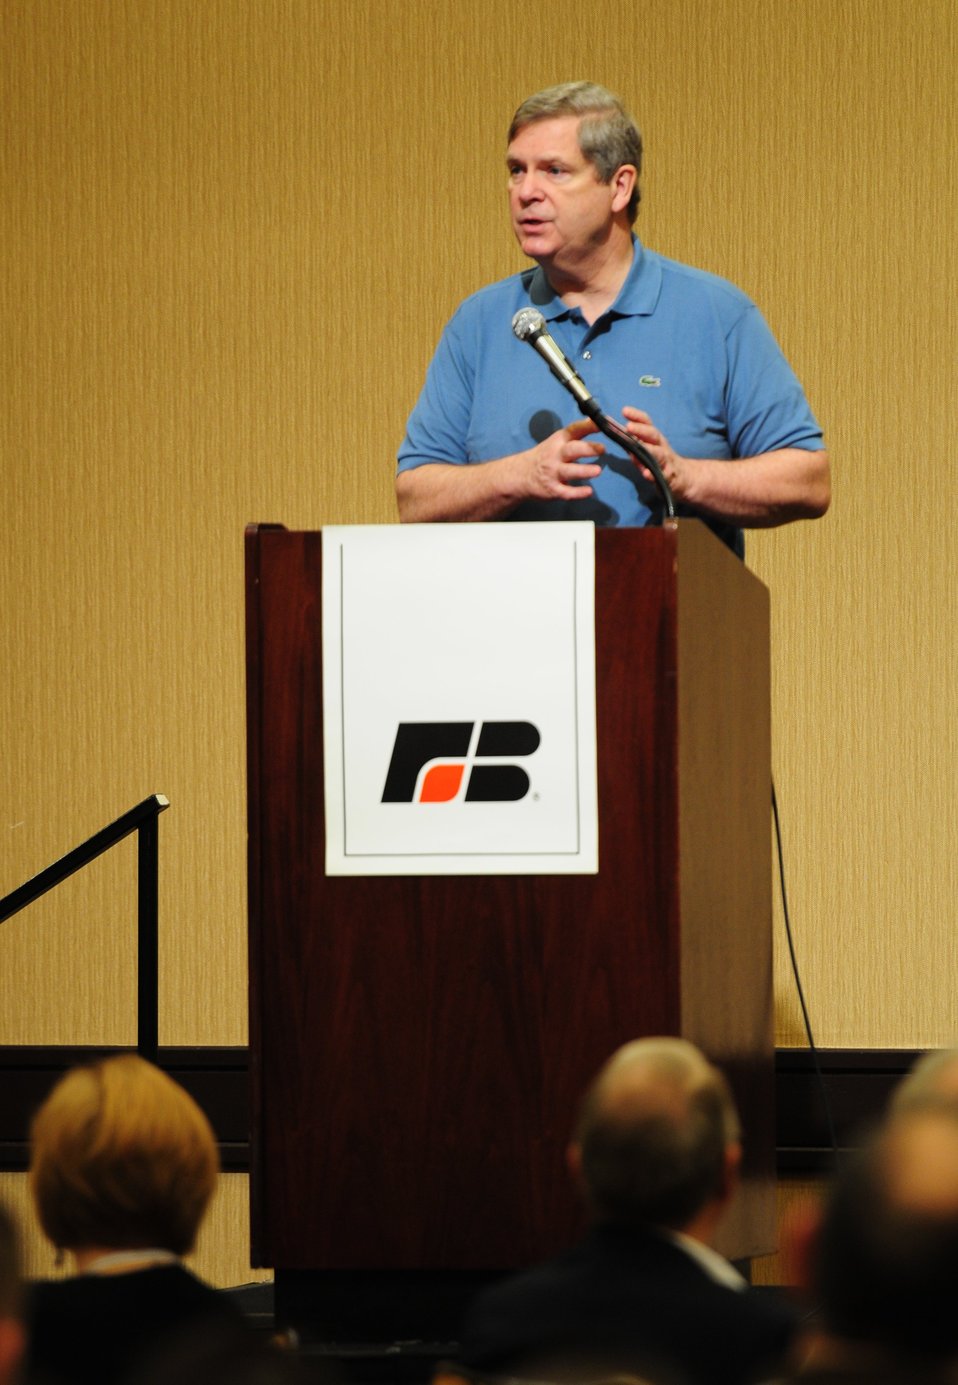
Agriculture Secretary Tom Vilsack speaks at the Iowa Farm Bureau event at the Sheridan Waikiki, in Honolulu, Hawaii, on Sunday, January 8, 2012.